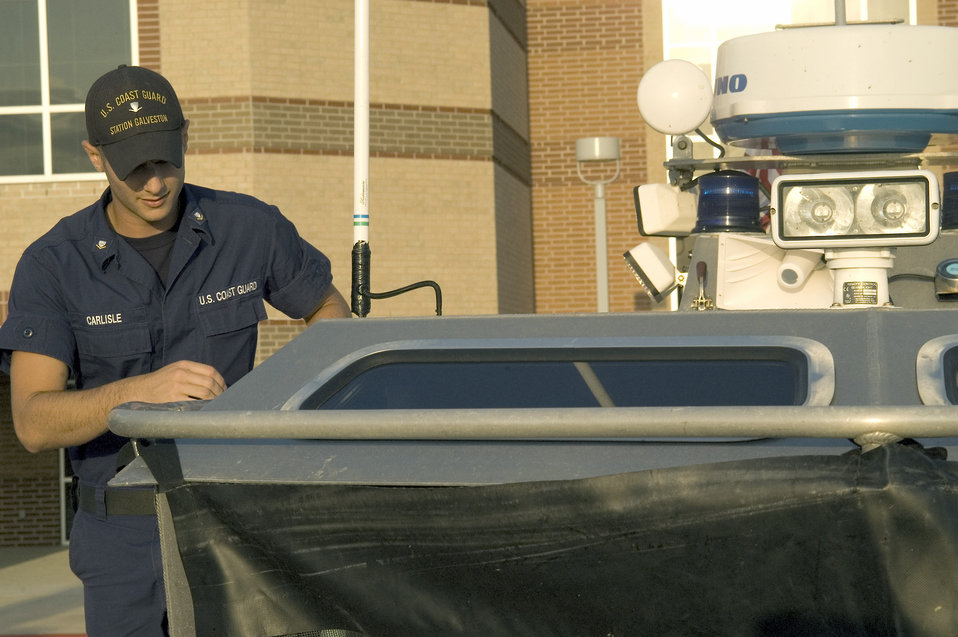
Coast Guard Incident Command Center prepares for Ike

Coast Guard Petty Officer 3rd Class Ryan Carlisle prepares one of the 25-foot response boats Sept. 11 at the Leonard E. Merrell Center in Katy, Texas. Petty Officer Carlise and members of the Coast Guard Sector Houston-Galveston are preparing for the arrival of Hurricane Ike expected to hit the Gulf Coast Sept. 13.